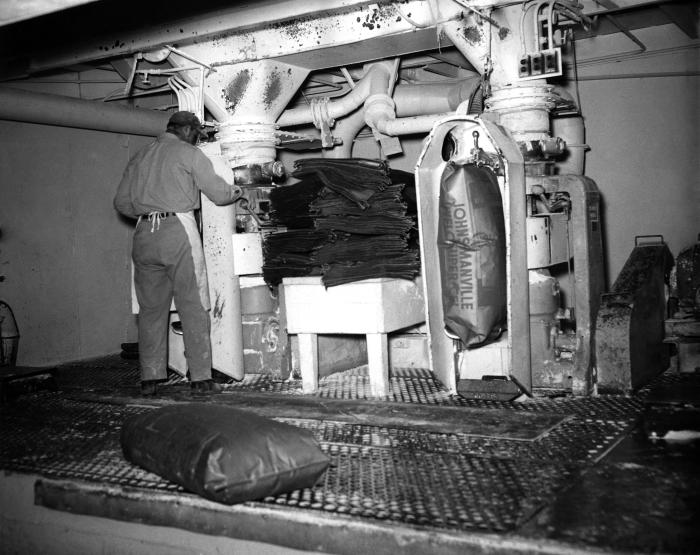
This 1958 historical photograph was provided by the Center for Disease Control's (CDC), National Institute for Occupational Safety and Health (NIOSH), and depicted a Lompoc, California industrial plant worker bagging diatomaceous earth. Local exhaust ventilation, and the use of a filtering respirator worn by the plant worker, reduced his exposure to the lung-damaging dust. Inhaled dust or other airborne particulate materials containing silica that is deposited in the lungs, will cause the lung tissue to react by creating generalized nodular fibrotic changes, and is known as 'pneumoconiosis', which is also know an pneumosilicosis, or 'grinders' disease'. The image originally appeared in a U.S. Public Health Service Publication No. 601, in an article entitled,'Pneumoconiosis in Diatomite Mining and Processing', 1958.